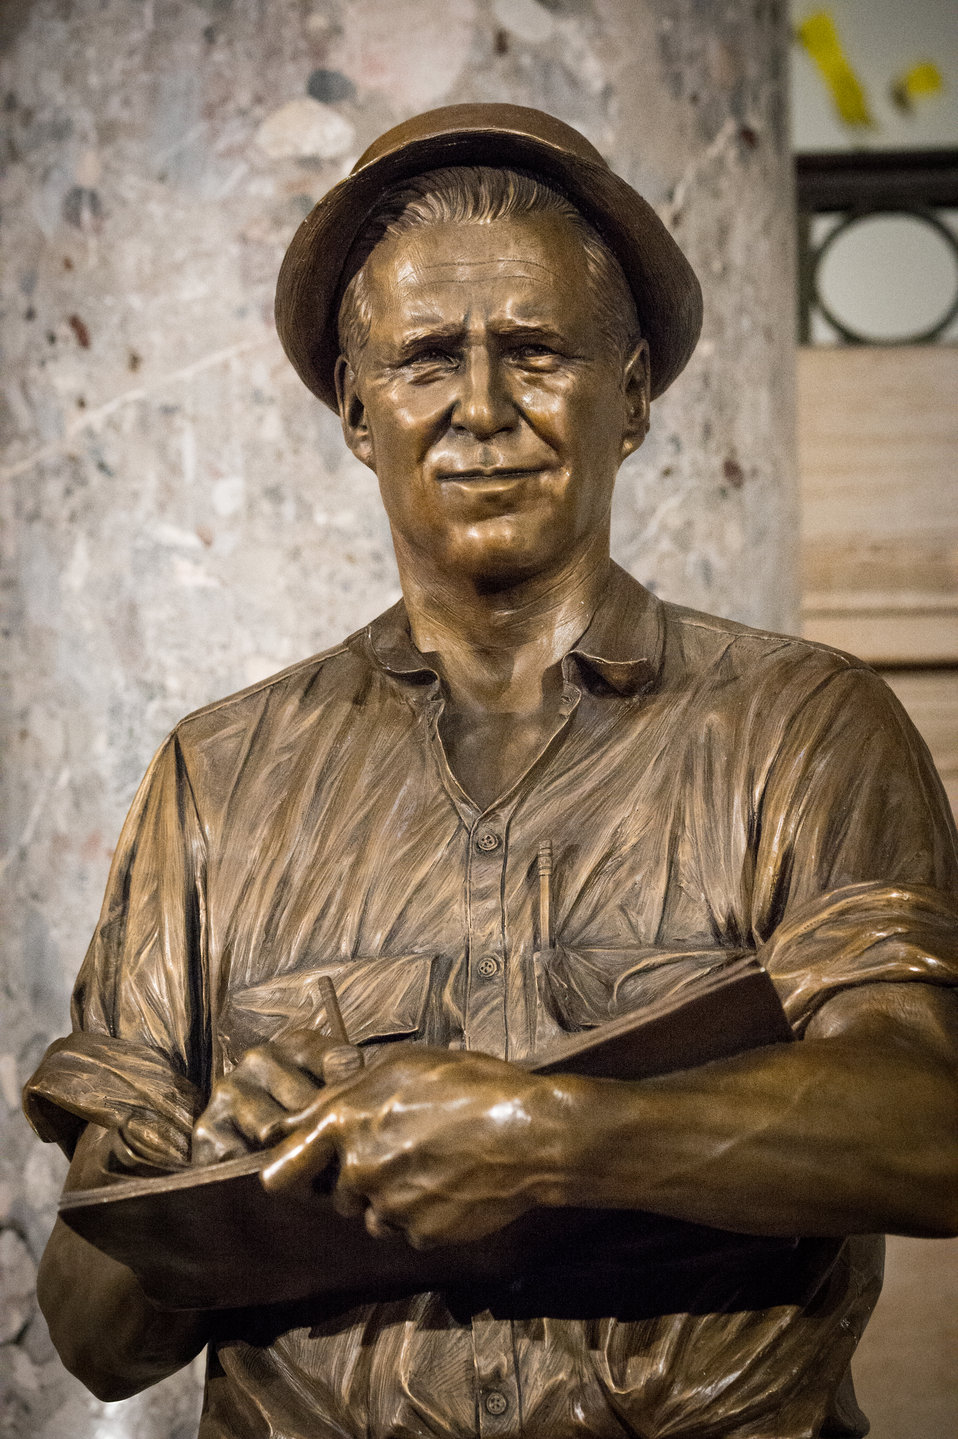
The Dr. Norman E. Borlaug statue after it was unveiled at the National Statuary Hall at the U. S. Capitol in Washington, D.C. on Tuesday, Mar. 25, 2014. Today commemorates 100 years since Dr. Borlaug’s birth. Through his scientific and humanitarian achievements, Nobel Laureate Dr. Norman E. Borlaug (1914-2009) has been credited with saving millions of people from starvation in developing countries. His collaborative work with scientists in Mexico on a high-yielding, disease resistant dwarf wheat sparked the Green Revolution of the 1960s. The National Statuary Hall Collection in the U.S. Capitol is composed of statues donated by individual states to honor persons notable in their history.